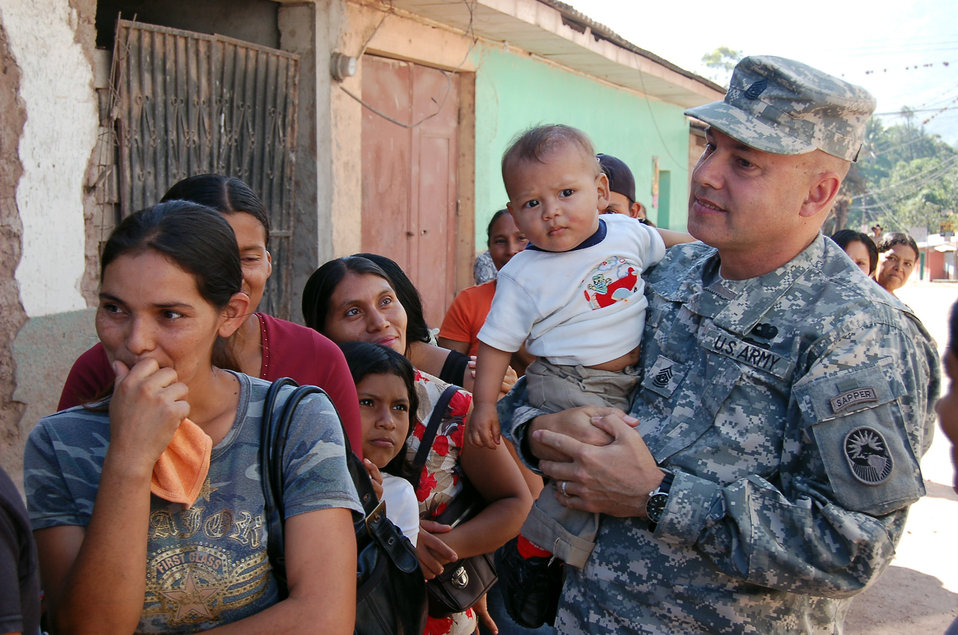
Southern Command, AF South Leadership visit deployed troops

Army Command Sgt. Maj. Michael Balch socializes with people in line for gift baskets containing food, Dec. 9, at Ajuterique, Honduras. The town contains 11,000 people affected by recent flooding. Sergeant Balch is assigned to U.S. Southern Command.